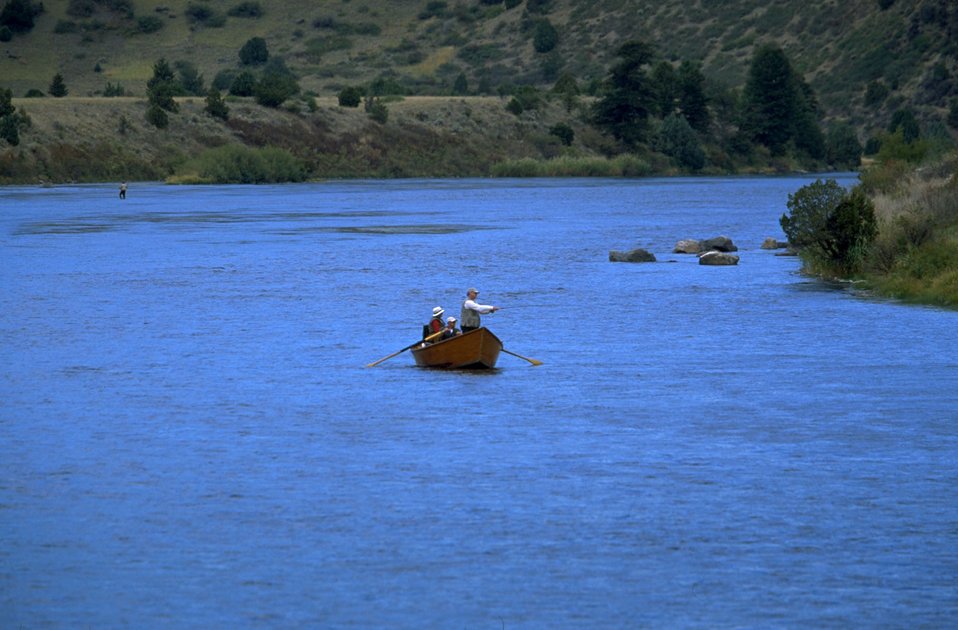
Fishing at the bend of the Madison